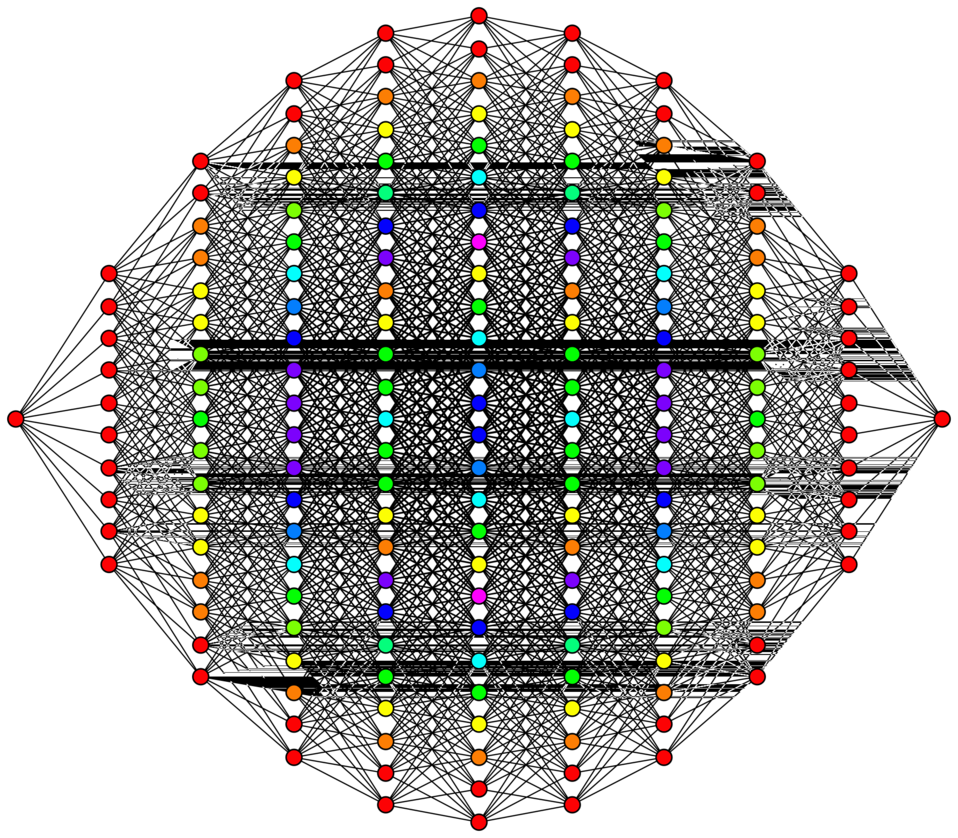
10-hypercube (10-cube) graph. This hypercube graph is an orthogonal projection. This oriented projection shows columns of vertices positioned a vertex-edge-vertex distance from one vertex on the left to one vertex on the right, and edges attaching adjacent columns of vertices. The number of vertices in each column represents rows in Pascal's triangle, being 1:10:45:120:210:252:210:120:45:10:1 in the case of this 10-cube. Note: Starting with the tesseract the orthogonal projection shows vertices overlapping. The counts of vertices at each 2d location are represented by colors, red, orange, yellow, green, etc.